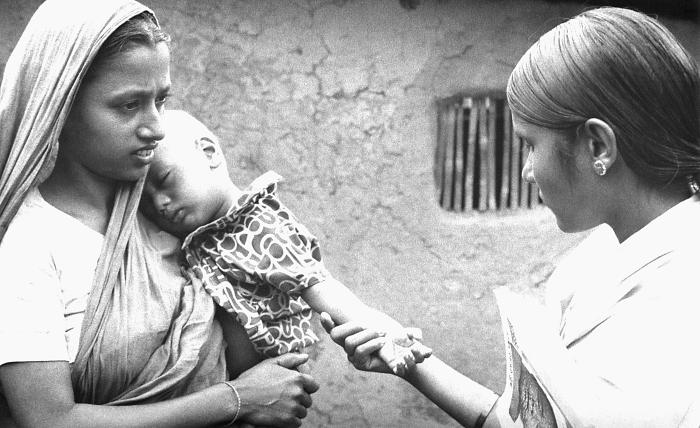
This volunteer smallpox eradication team vaccinator was in the process of checking the smallpox vaccination scar on this young child's left forearm, while he rested his head upon his mother's shoulder.Normally, individuals should not get the smallpox vaccine if they are younger than 12 months of age. However, the mantra preached by the eradication team members was 'that there was only one type of person who did not need a vaccination - a dead person'. During non-emergency smallpox scenarios, the Advisory Committee on Immunization Practices (ACIP) advises against non-emergency use of smallpox vaccine in children younger than 18 years of age.